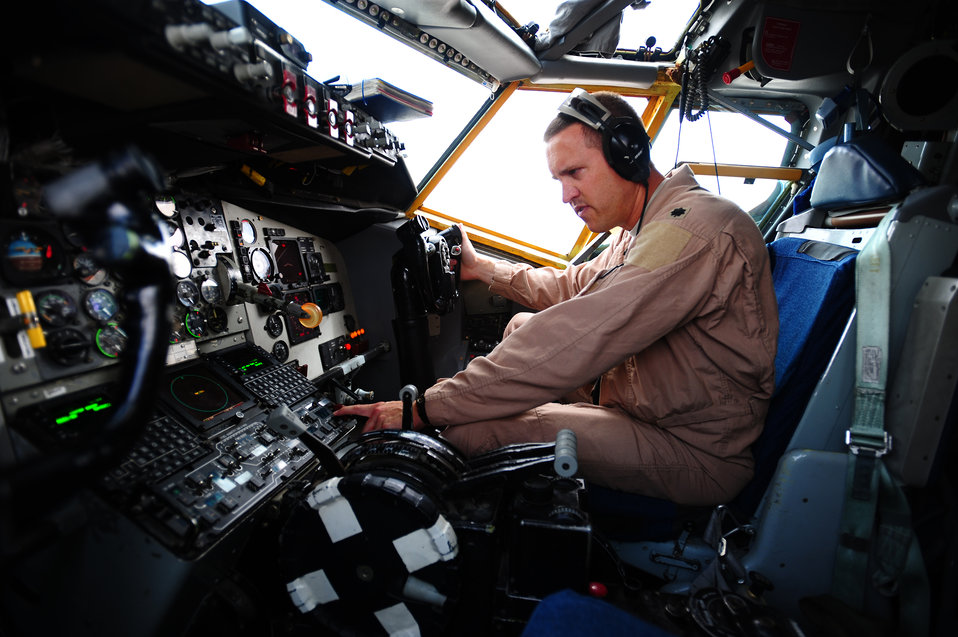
Preparing to deliver

Lt. Col. Joseph Oline conducts preflight checks aboard a KC-135 Stratotanker Feb. 26, 2011, before taking off from a forward-deployed location in Southwest Asia in support of Operation Enduring Freedom. Colonel Oline is a pilot assigned to the 340th Expeditionary Air Refueling Squadron.